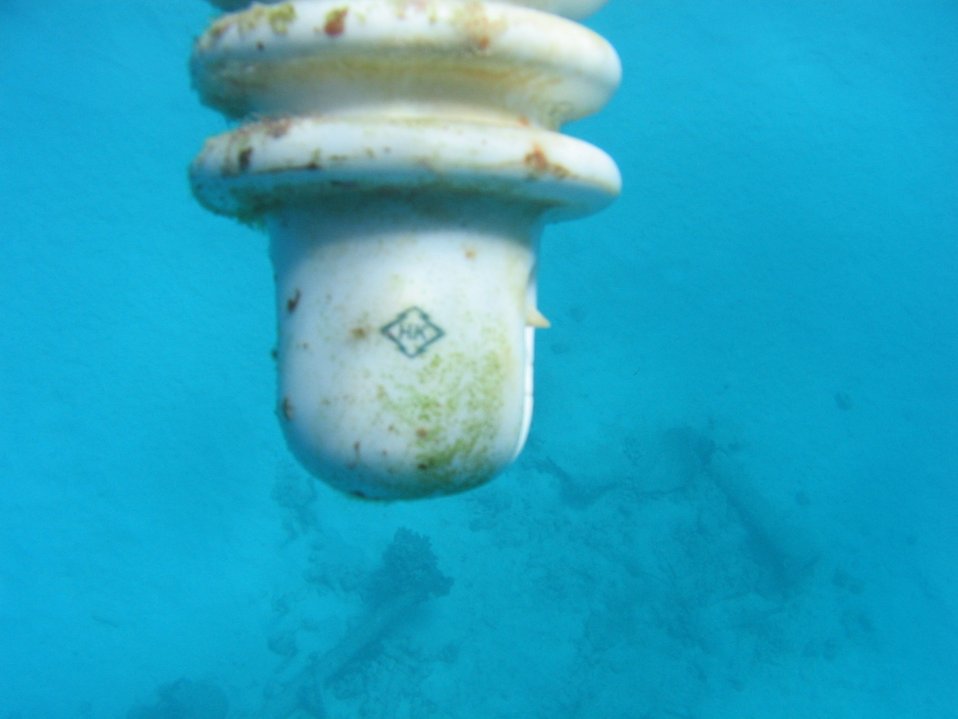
Electrical insulator found in debris field of early Twentieth Century wreck on Pearl and Hermes Reef. Inside the atoll.